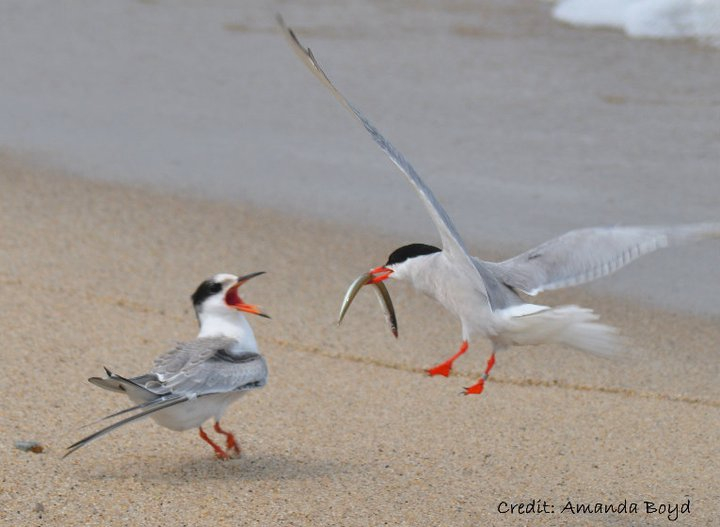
common tern feeds its young

Nantucket National Wildlife Refuge